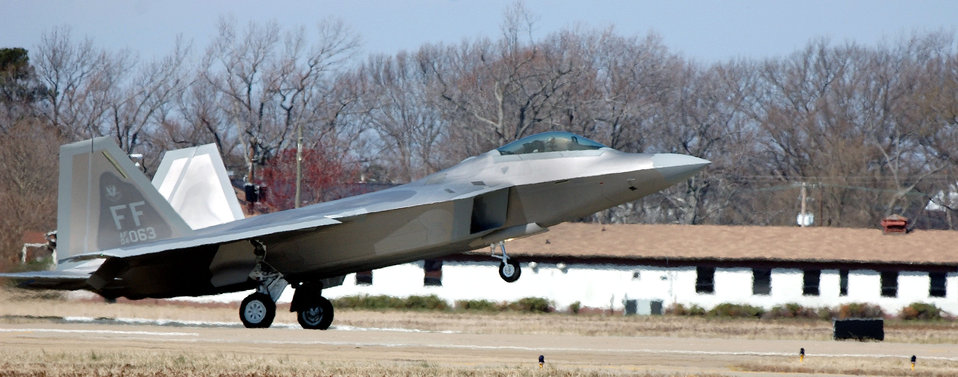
94th Raptors

Maj. Kevin Dolata lands an F-22A Raptor at Langley Air Force Base, Va., Friday, March 3, 2006. The new Raptor is the second assigned to the 94th Fighter Squadron. Major Dolata is the squadron's assistant director of operations.